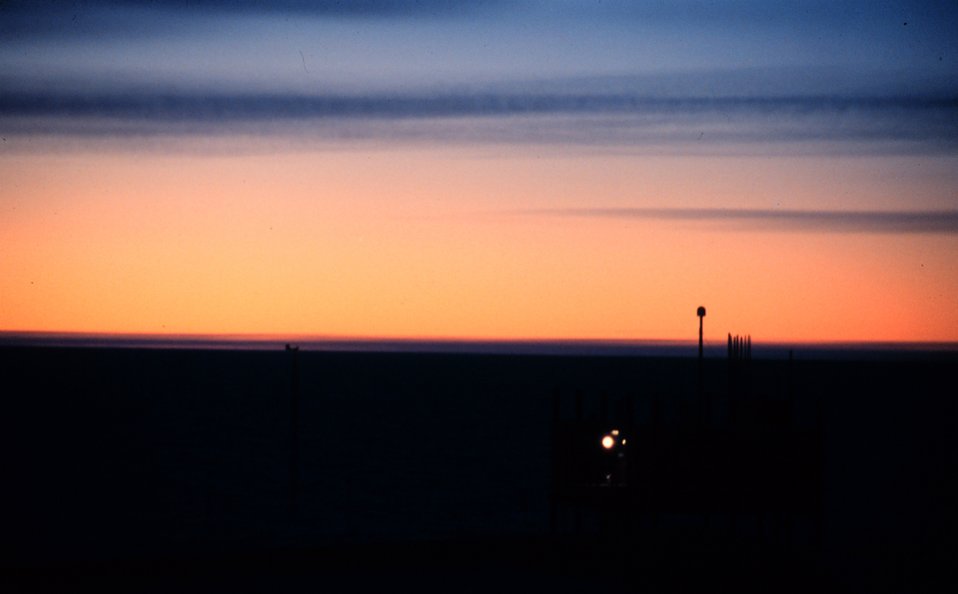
March sunset silhouetting the Clean Air Facility